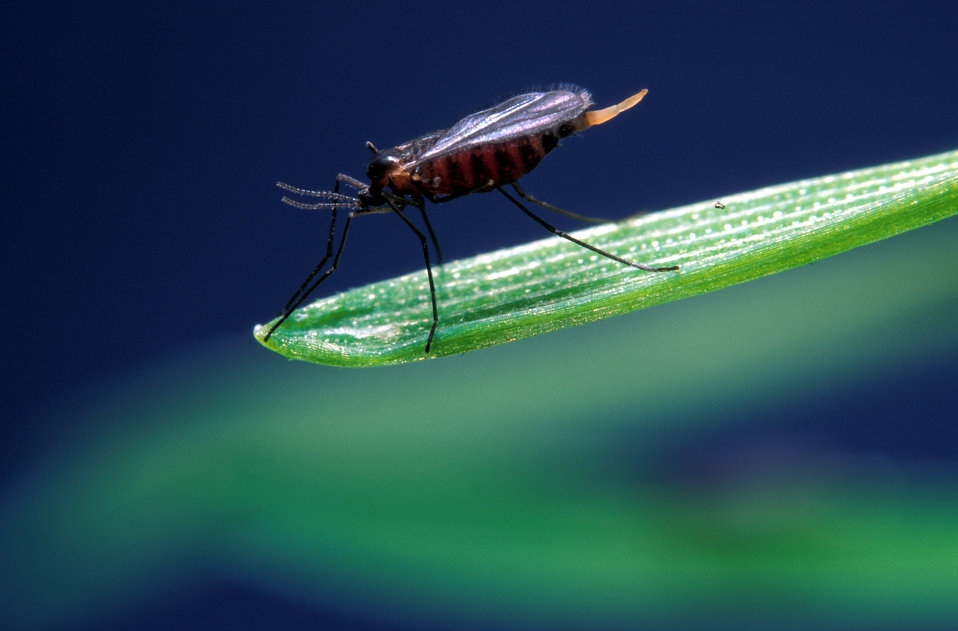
The female Hessian fly is approximately one-eighth-inch long and emits a sex pheromone from her ovipositor to attract males.